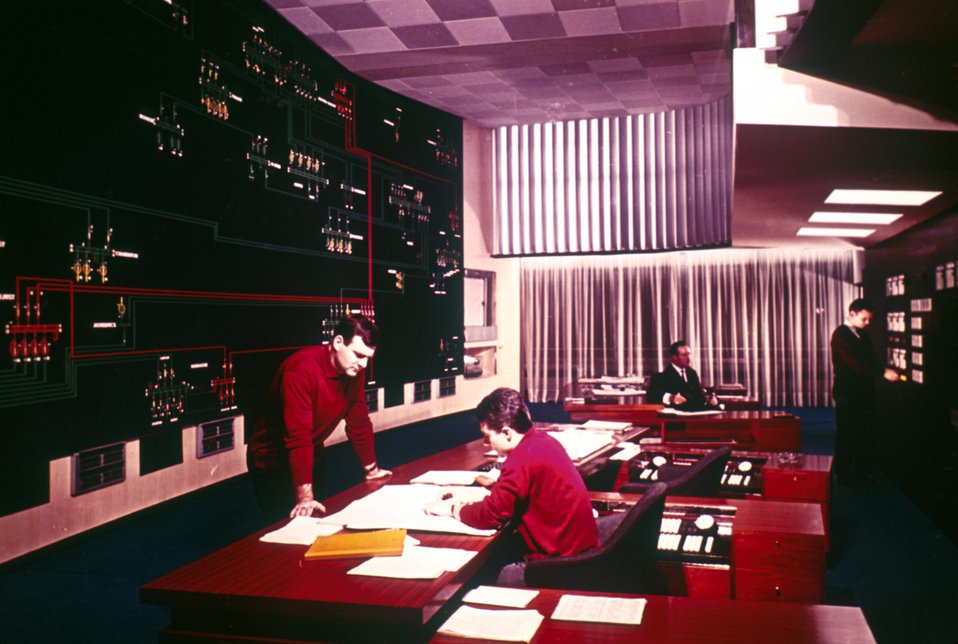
Un dispatching.